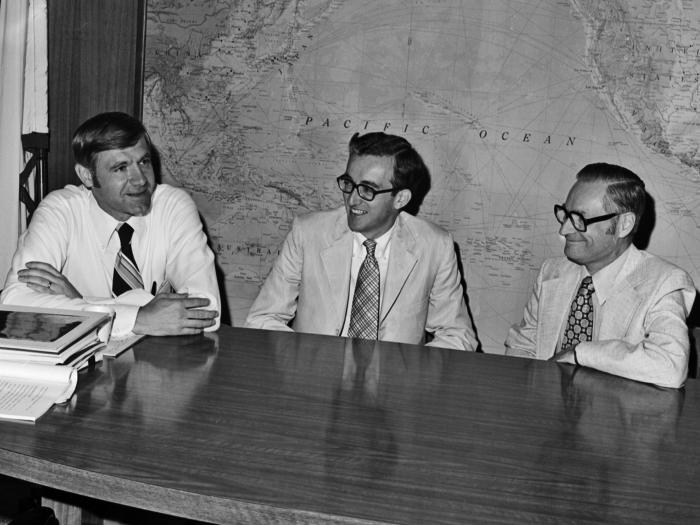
This 1977 photograph depicted former Centers for Disease Control and Prevention Director William H. Foege, M.D., M.P.H. (left) seated at a desk discussing policy matters with two unidentified individuals during his directorship, which lasted from 1977 until 1983.